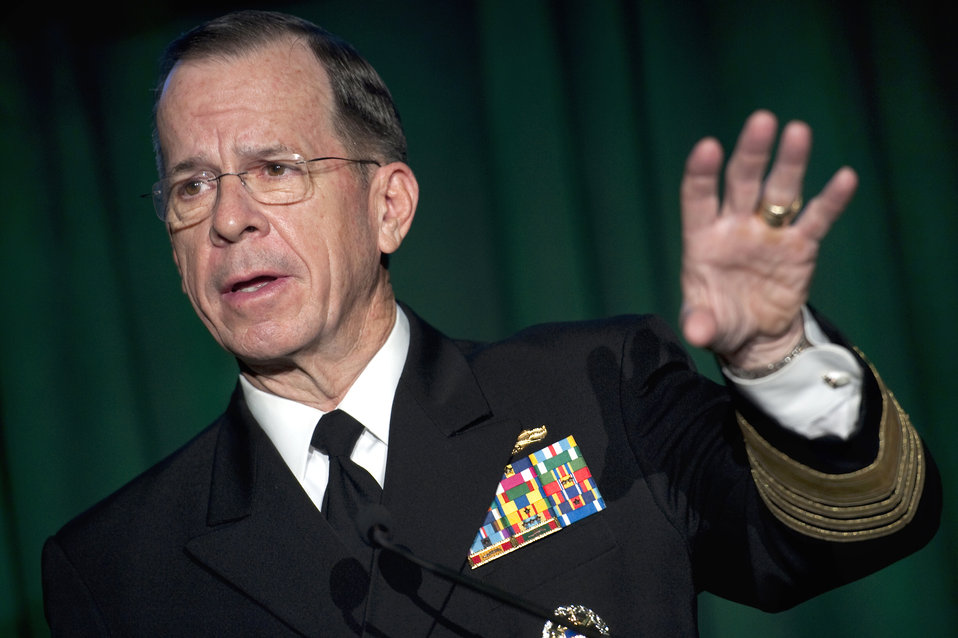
Podcast

Navy Adm. Mike Mullen, the chairman of the Joint Chiefs of Staff, called President Barack Obama's